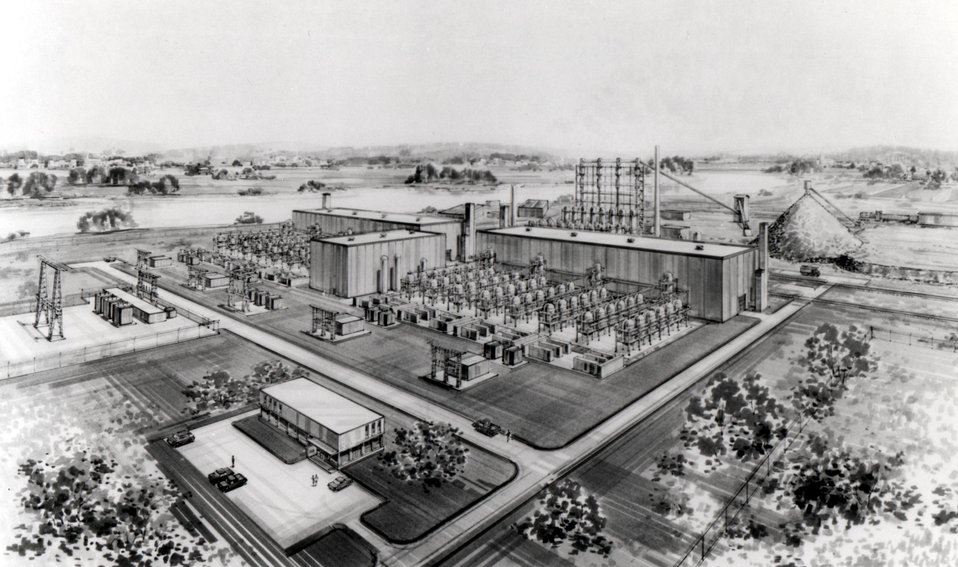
The most promising of the second generation technologies is the molten carbonate system.